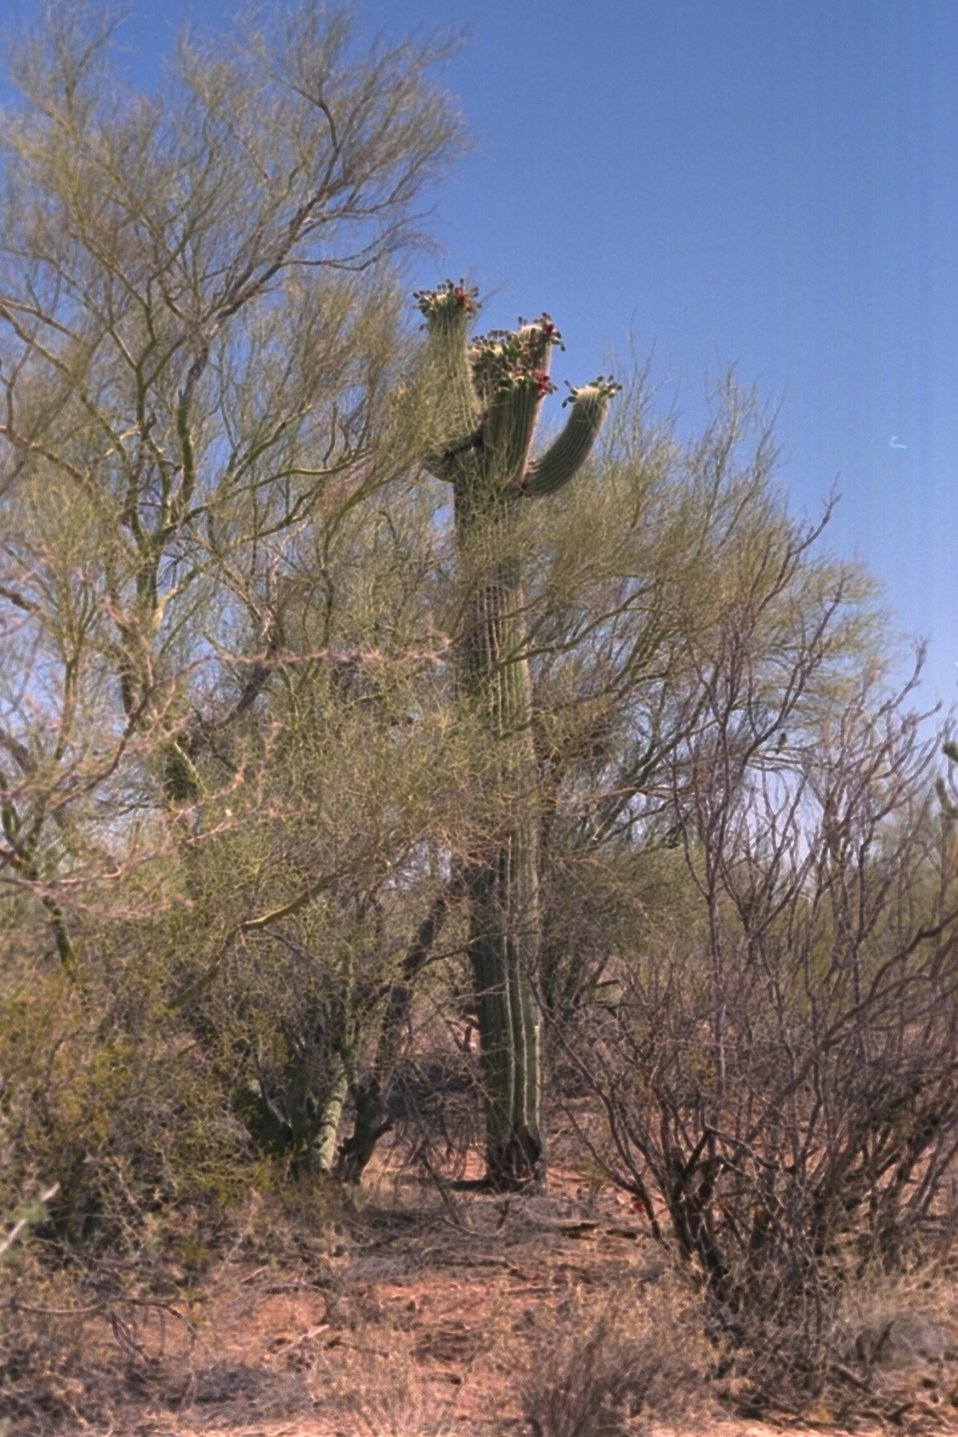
A tall saguaro cactus next to a Palo Verde tree in the Ironwood Forest National Monument.